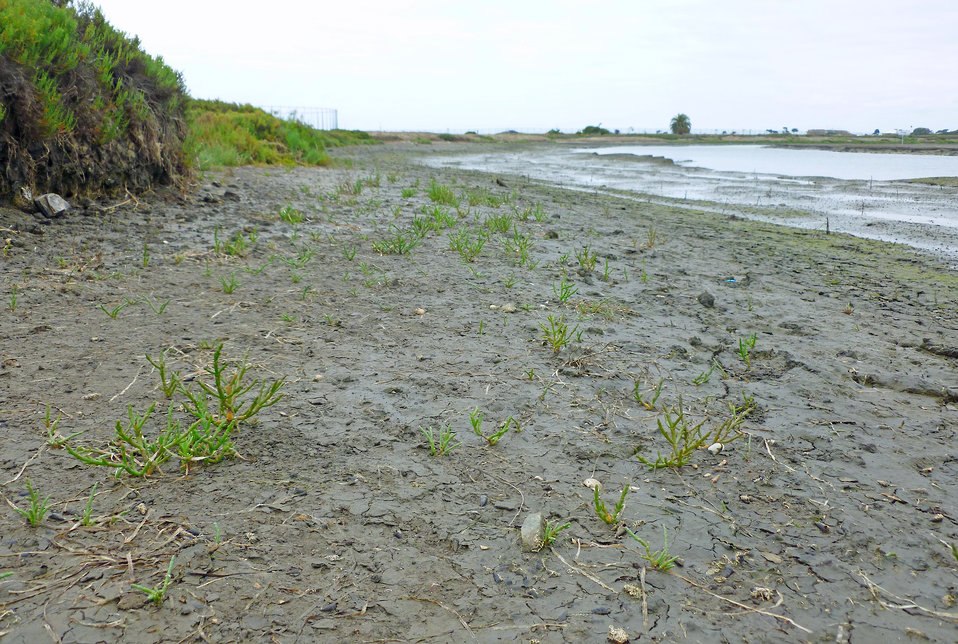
Salt Pond Restoration Project natural plant recruits!

On April 23, 2012, Project Manager for the Western Salt Pond Restoration Project discovered these naturally recruiting Salicornia pacifica (Pickleweed) plants in Pond 10! It's great to see natural recruitment take place now that Pond 10 has been exposed to the fluctuating tides every day since August of 2011. Go pickleweed!